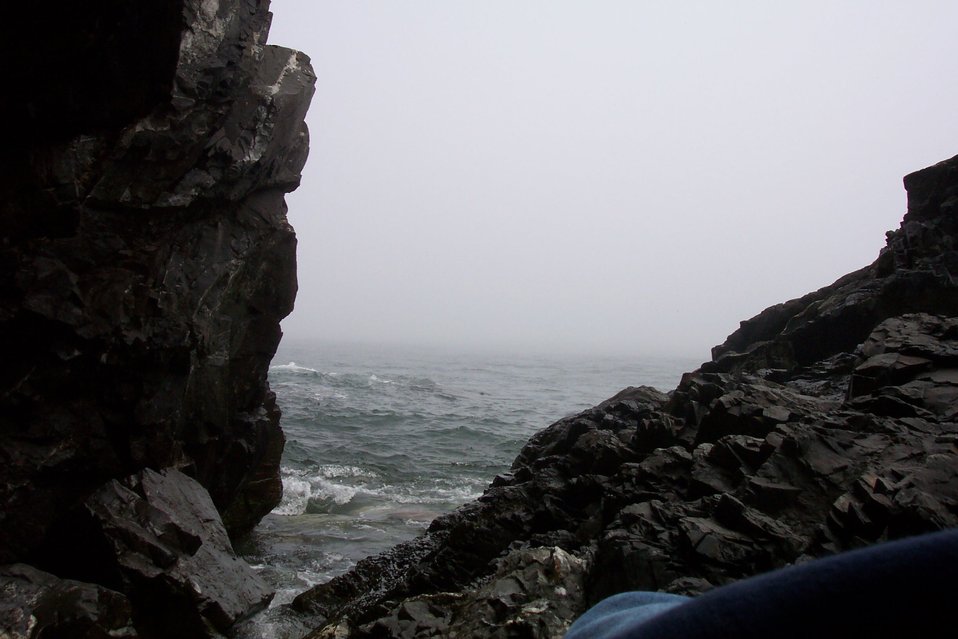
Looking to the sea through a cleft in the rocks at West Quoddy Head.